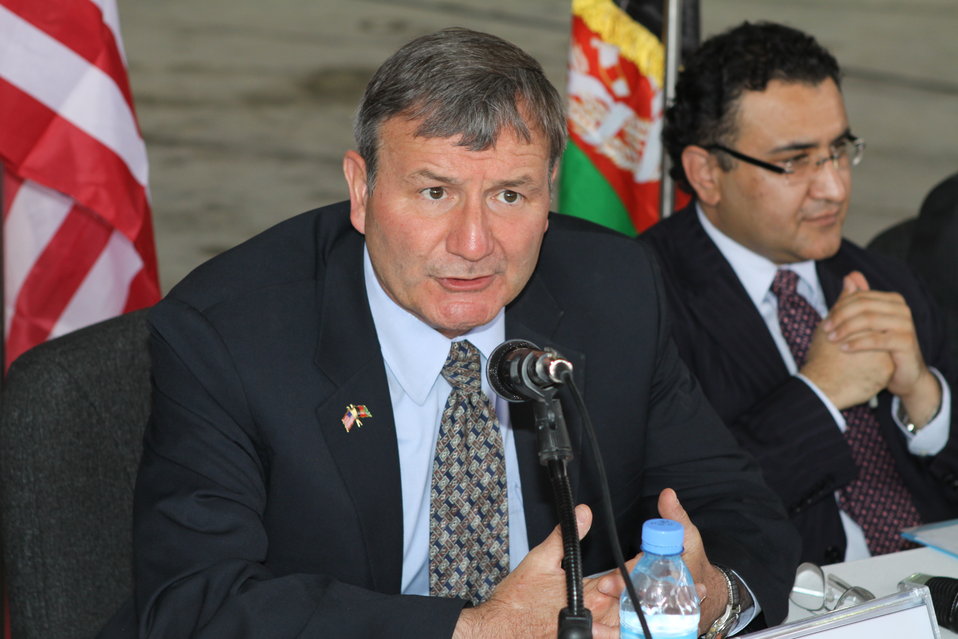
100525 Hirat Marble Conference 319